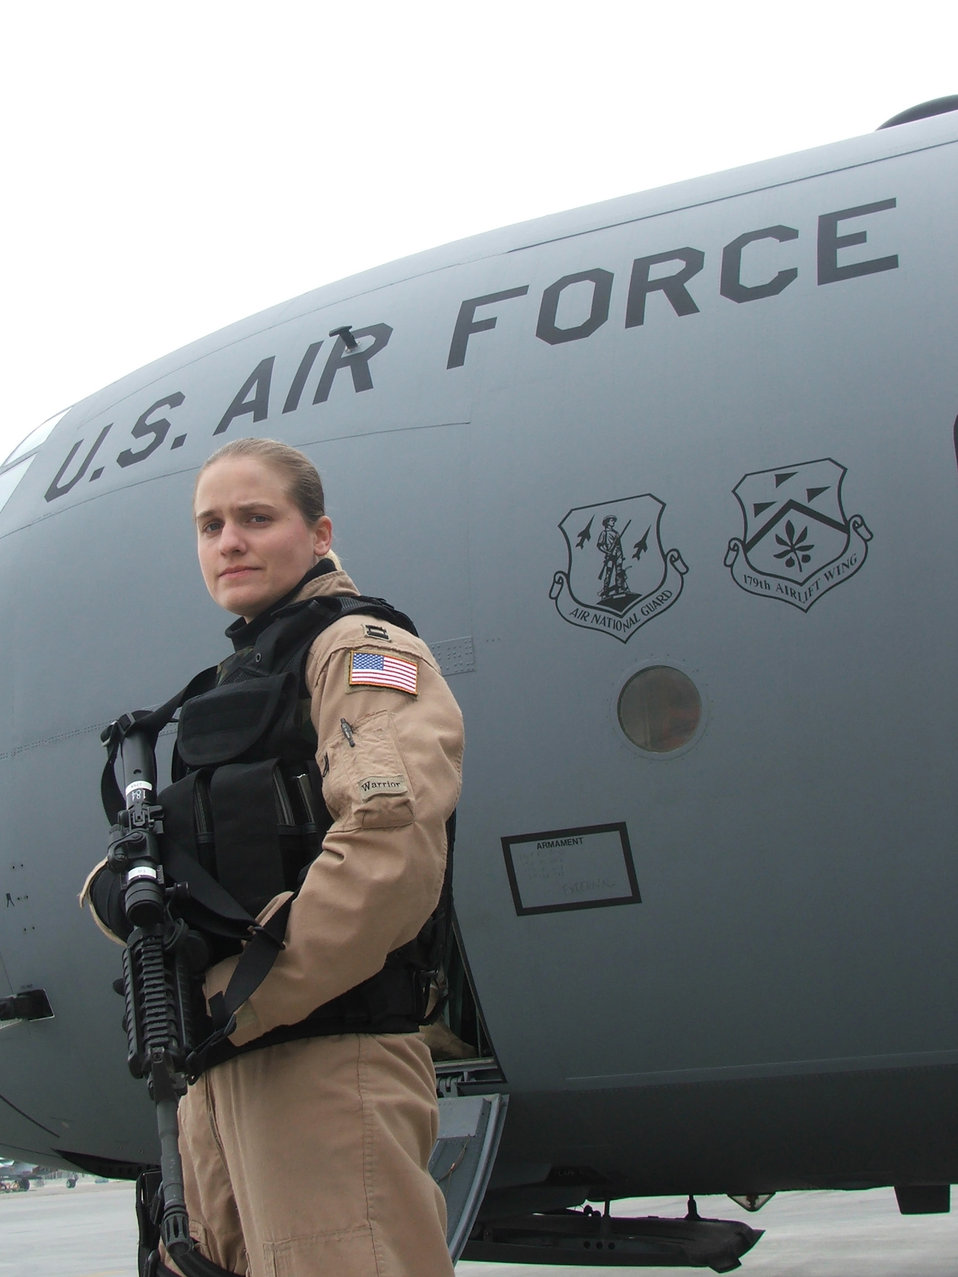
Security forces provide fly-away protection

KARSHI-KHANABAD AIR BASE, Uzbekistan -- Capt. Sara Babbitt prepares to board a C-130 Hercules here for a security forces fly-away mission to a forward-operating base in Afghanistan. Security forces troops fly along to provide protection for the aircrew and cargo they are carrying. Captain Babbitt is a 416th Expeditionary Mission Support Squadron security forces flight commander deployed here from Hill Air Force Base, Utah.